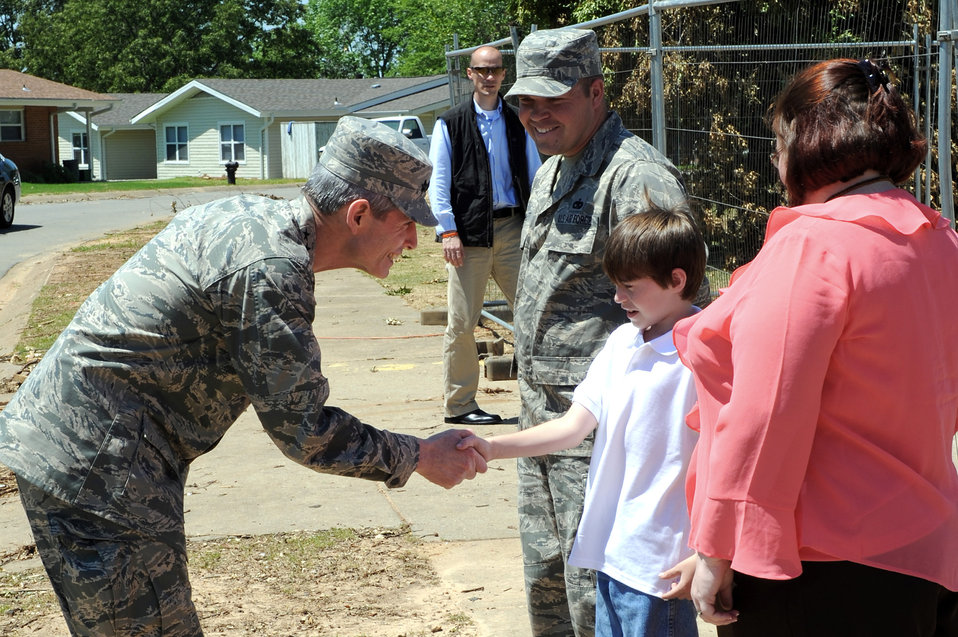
CSAF addresses AF issues, surveys tornado damage at Little Rock AFB

Air Force Chief of Staff Gen. Norton Schwartz shakes hands with Jesse, son of Staff Sgt. Eric Bramblett, May 4, 2011, outside their base house at Little Rock Air Force Base, Ark. Sergeant Bramblett is a vehicle operator and dispatcher assigned to the 19th Logistics Readiness Squadron. He returned from a deployment to Iraq after his house was destroyed by the tornado that hit Little Rock AFB April 25, 2011.